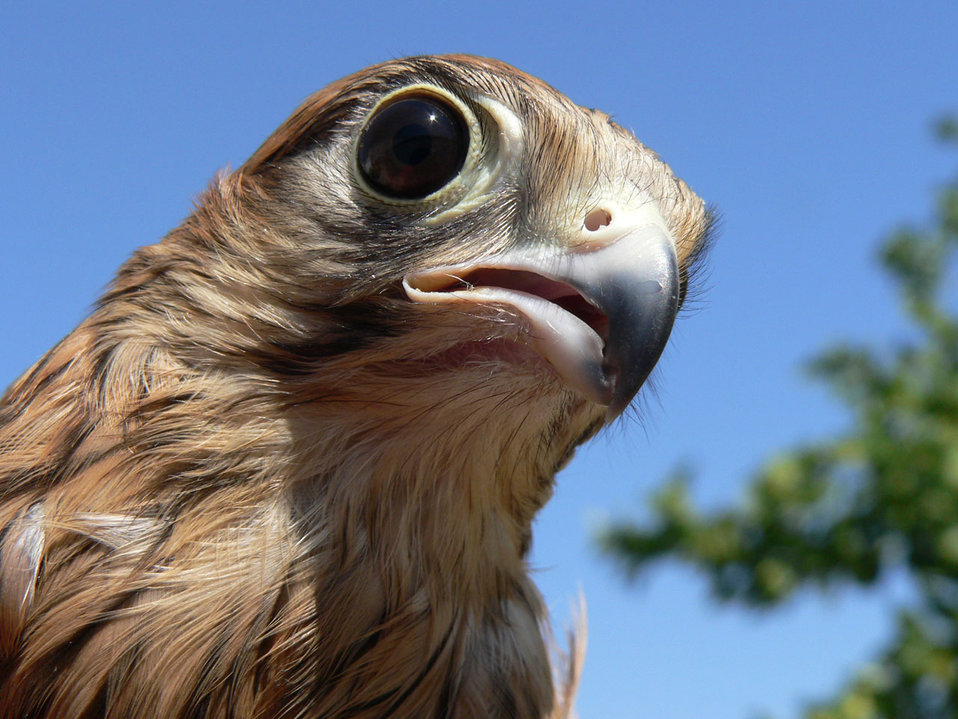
The poses of the lesser kestrel

Lesser kestrel (falco naumanni).